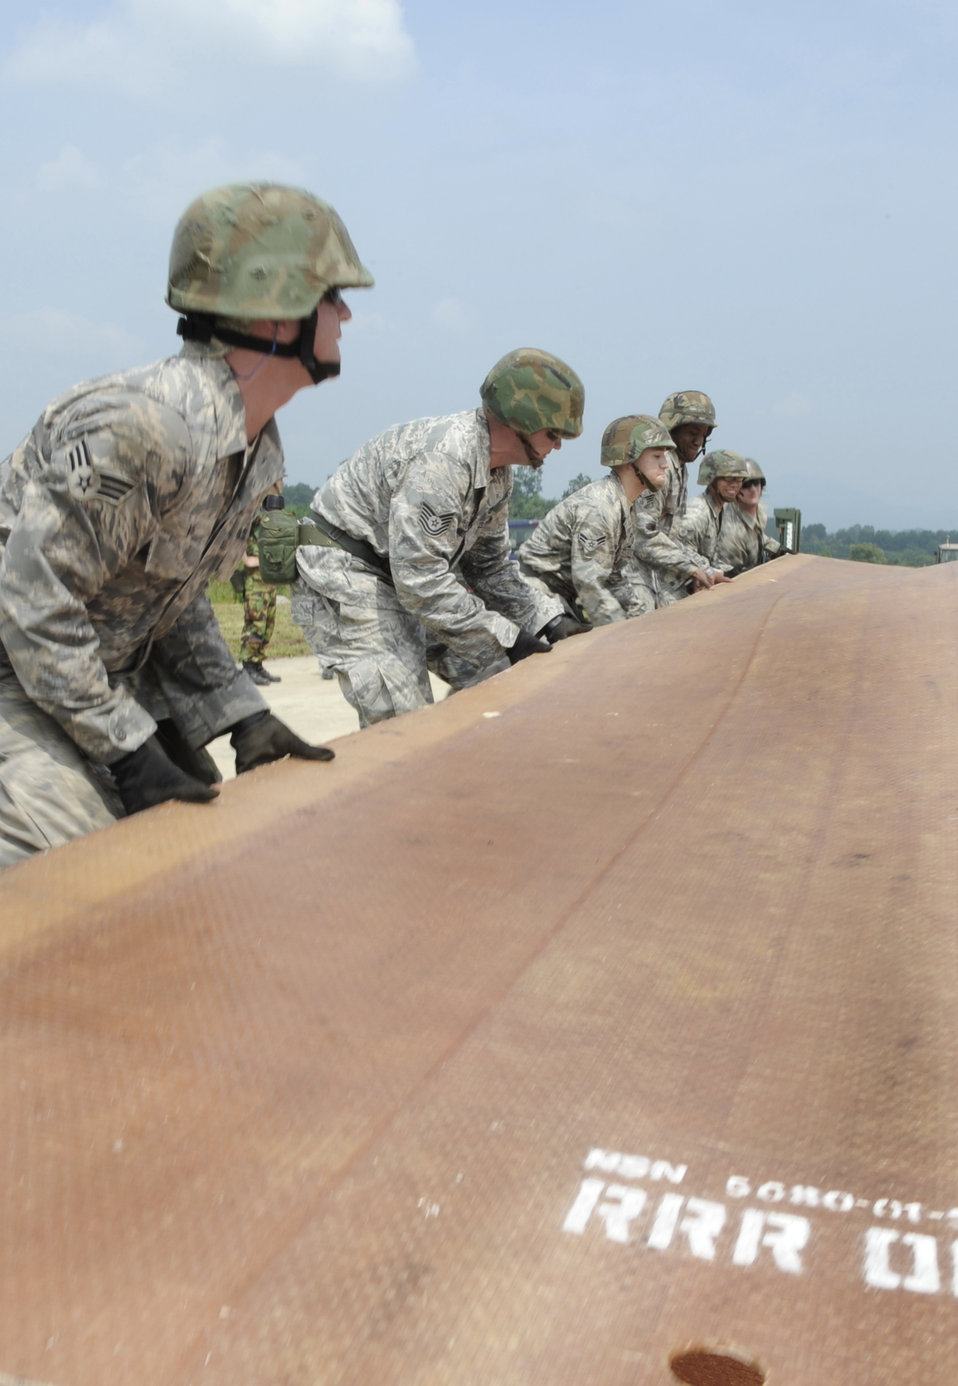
Osan AB's airfield damage repair team train with South Korean air force

Airmen from the 51st Civil Engineer Squadron unfold a fiberglass mat on the simulated runway before it is put into place Aug. 19 at Jungwon Air Base, South Korea. The 30-foot long, 54-foot wide foot mats are used to quickly repair runway damage, and can be connected to cover a large area. The mats are being moved as part of a joint combined rapid runway repair training exercise with Airmen from the South Korean air force's 19th Tactical Fighter Wing and 91st Air Civil Engineer Group. The 51st CES Airmen are assigned to Osan Air Base, South Korea.